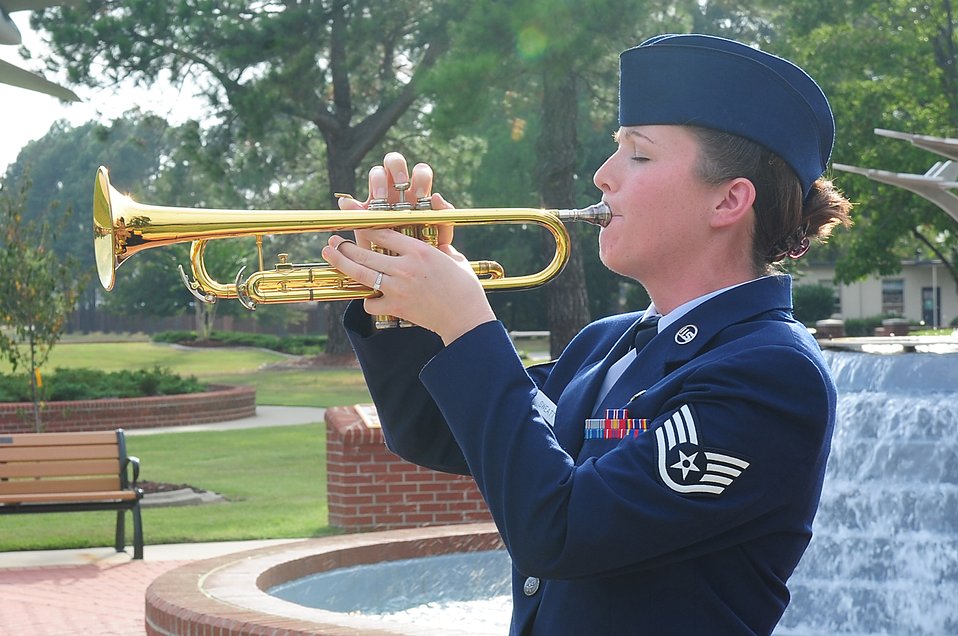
Air Combat Command honors POW/MIA Remembrance Day

Staff Sgt. Krystina Sweatt, a 4th Aircraft Maintenance Squadron crew chief at Seymour Johnson Air Force Base, N.C., plays ?Taps? during the Prisoners of WAr/Missing in Action remembrance ceremony Sept. 18, 2009. ?Taps? is a traditional military hymn signaling lights out, the closing of a funeral with honors or the conclusion of a POW/MIA ceremony.